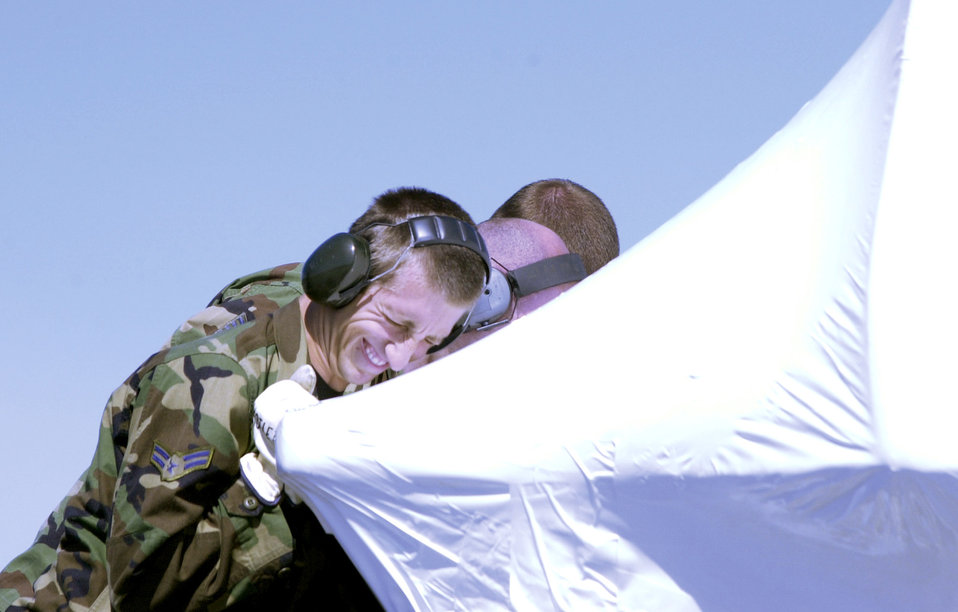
Simulator to help prepare Elmendorf pilots for C-17s

Airman 1st Class Daniel Kolter helps fellow Airmen unload a portion of a new C-17 Globemaster III simulator from a C-17 at Elmendorf Air Force Base, Alaska. Elmendorf is scheduled to receive its first C-17 in June 2007. The aircraft is replacing Elmendorf's aging fleet of C-130 Hercules and will be flown by the 517th Airlift Squadron when they arrive next year. Airman Kolter is with the Delaware Air National Guard's 166th Aerial Port Squadron.